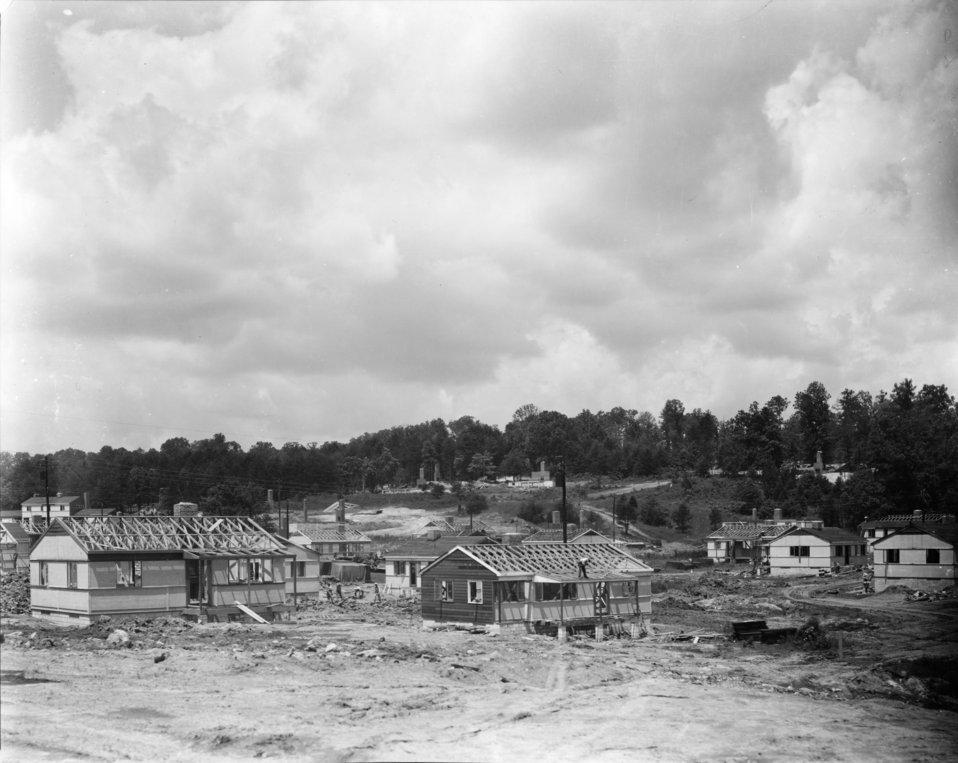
Construction activity at Oak Ridge